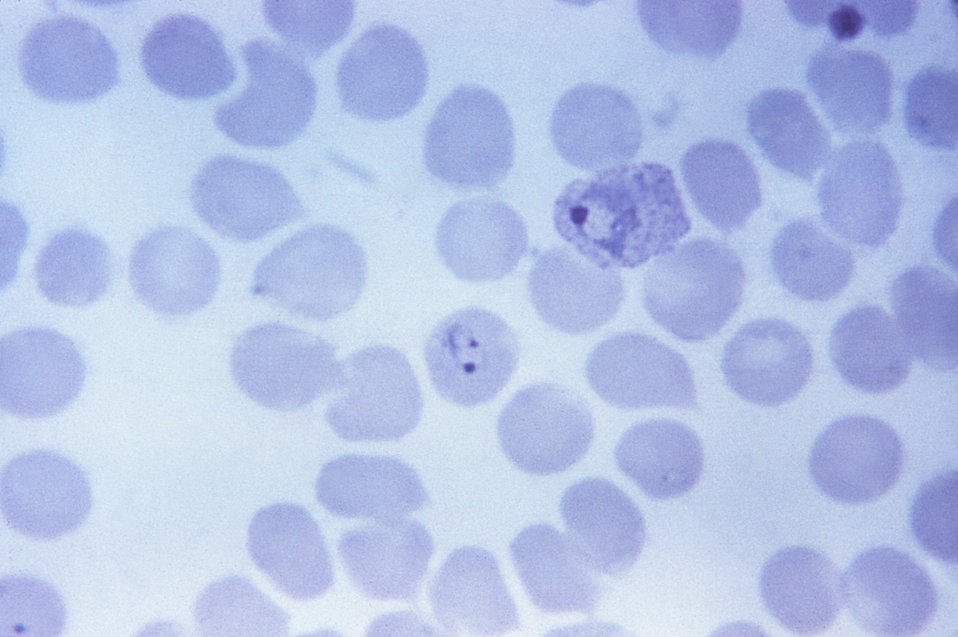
This thick film Giemsa stained micrograph shows a growing Plasmodium vivax trophozoite.